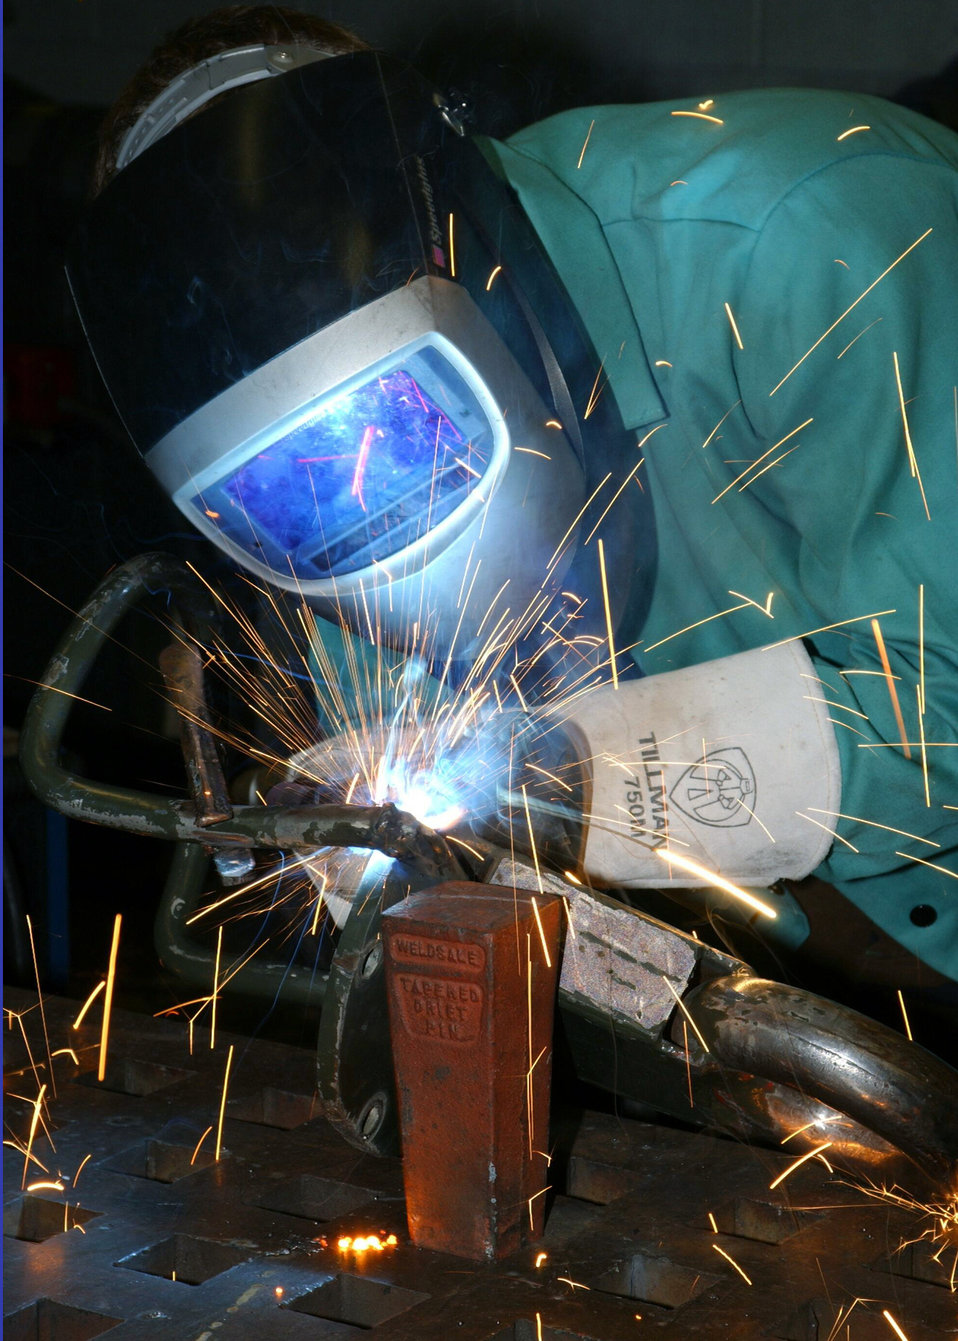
Letting sparks fly

DAVIS-MONTHAN AIR FORCE BASE, Ariz. -- Airman 1st Class John DeViese repairs a crack on a tow bar used to pull aerospace ground equipment. He is a metals technician with the 355th Equipment Maintenance Squadron’s fabrications flight here.